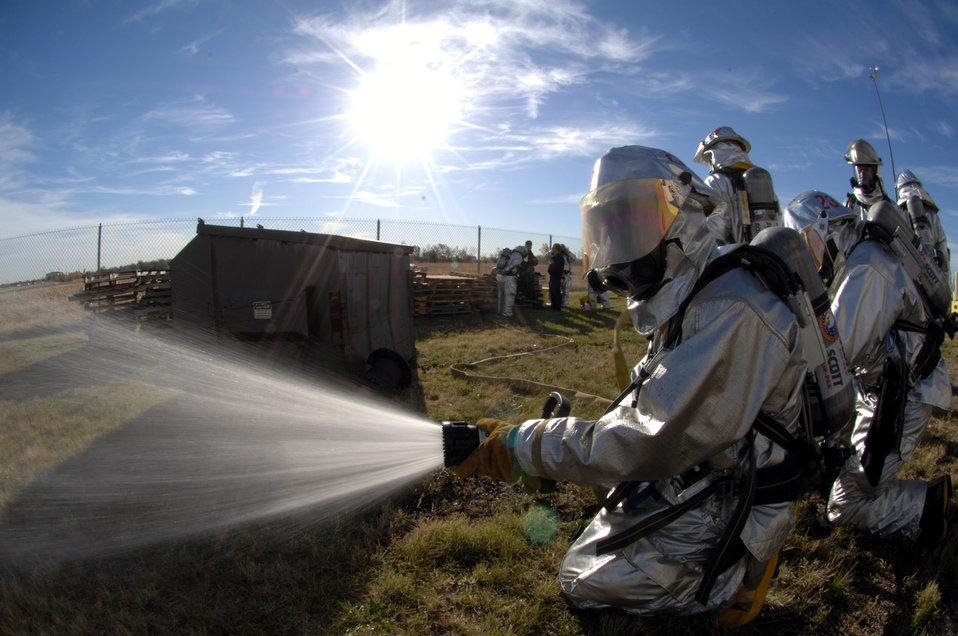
Controlling the burn

Fire fighters from the 5th Civil Engineer Squadron at Minot Air Force Base, N.D., participate in a fire training exercise Oct. 1st. This training is carried out a few times a year to keep the fire fighters ready to do their job.